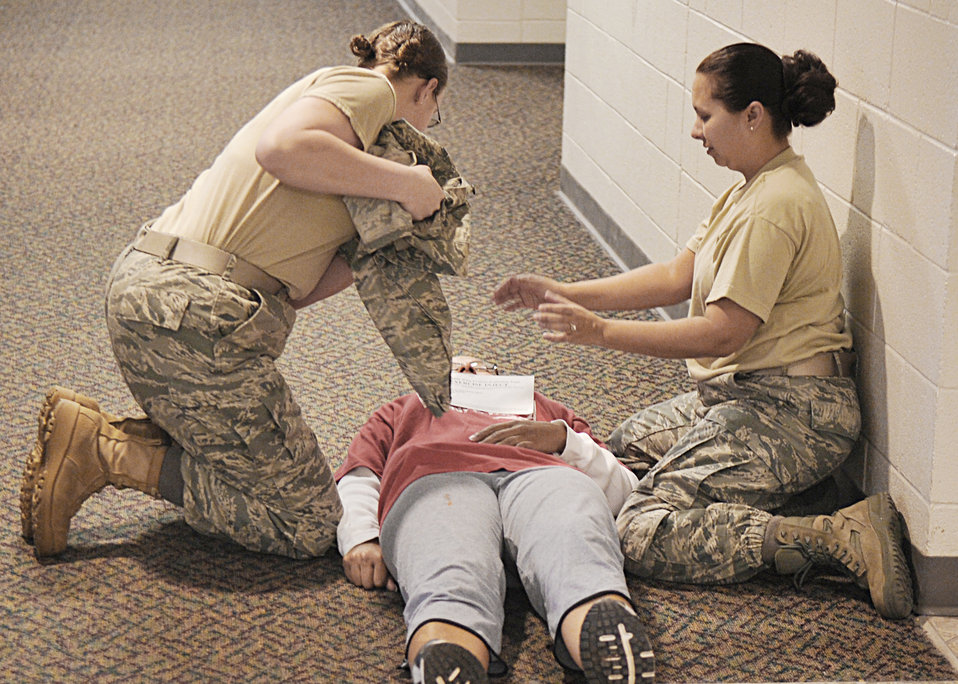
Holloman Airmen train for worst in active shooter exercise

Airmen perform self-aid and buddy care on a woman who suffered a simulated gunshot wound at the Domenici Fitness and Sports Center March 11, 2010, at Holloman Air Force Base, N.M. The goal of the exercise was to evaluate how well base Airmen are prepared for an active shooter scenario on the installation.